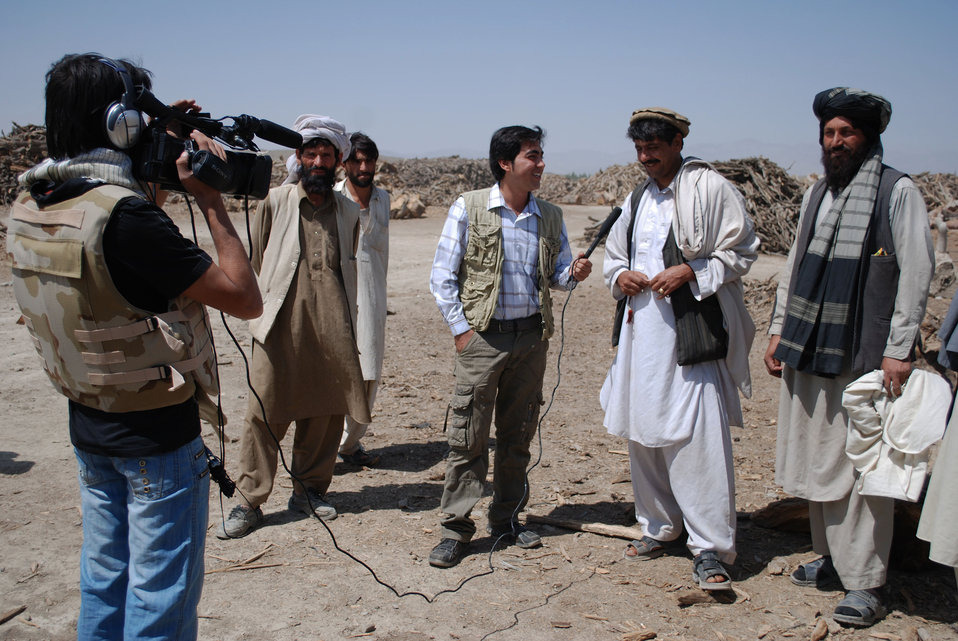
'On the Road' in Paktya Province